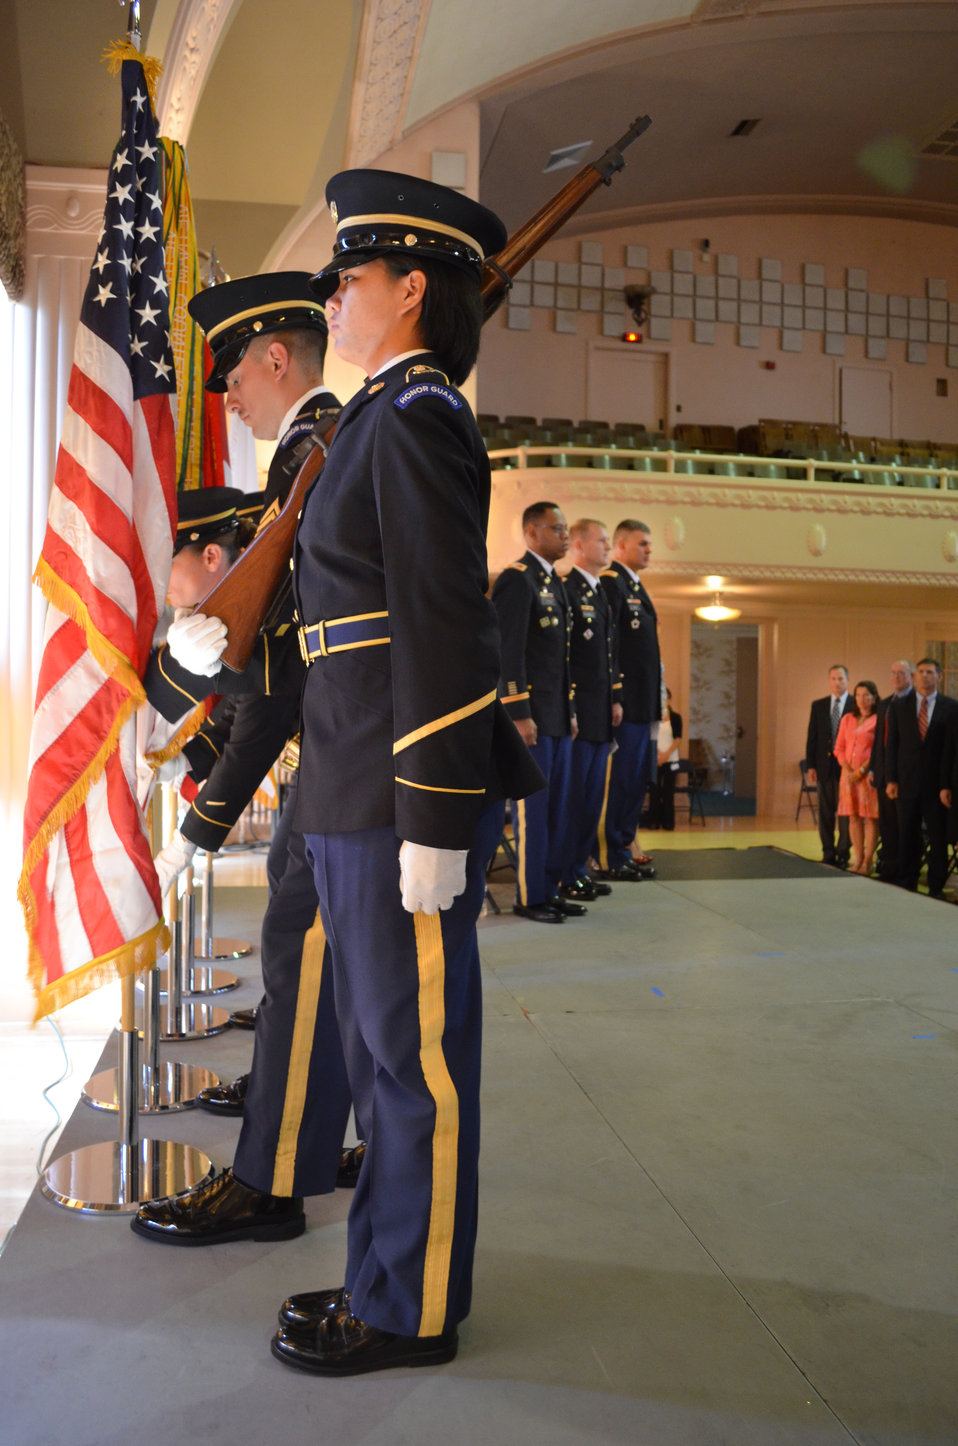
California National Guard Honor Guard retire the colors

Members of the California National Guard Honor Guard retire the colors during the Sacramento District’s change of command ceremony July 10, 2013 at the Masonic Temple in Sacramento, Calif. Colonel Michael J. Farrell officially assumed command from Col. William J. Leady, and is the district’s 31st commander.